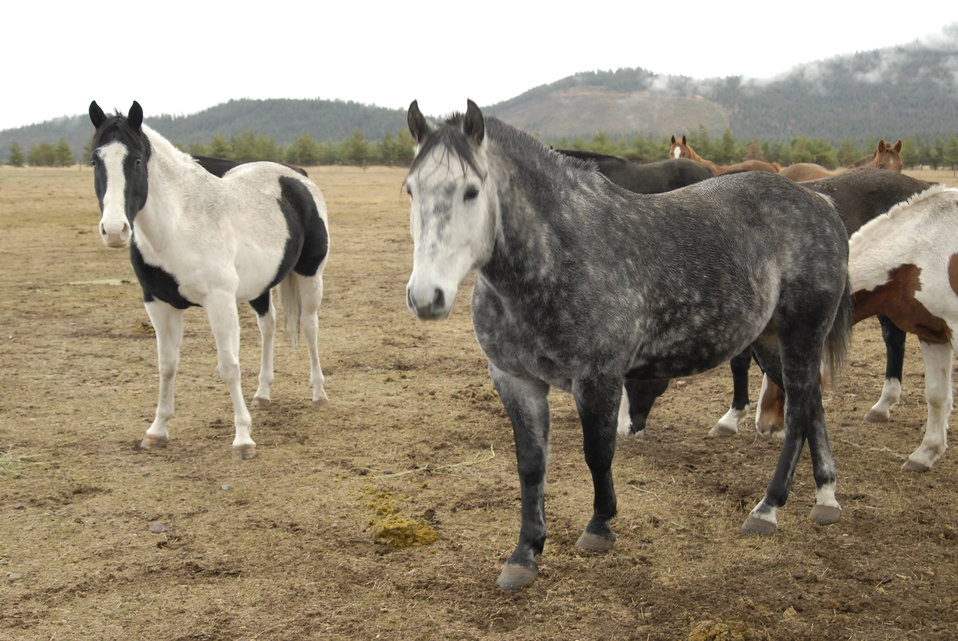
Wild horses roam free in the National Bison Range Wildlife Refuge in Montana on November 17, 2007. The U.S. Fish and Wildlife Service administers this refuge as part of the National Wildlife Refuge System. The refuge was established in 1908 and is one of the oldest Wildlife Refuges in the nation and was established to support a population of American bison. There are approximately 350-500 American bison. Other large wildlife found on the Range includes elk, whitetail and mule deer, pronghorn antelope, bighorn sheep and black bear.